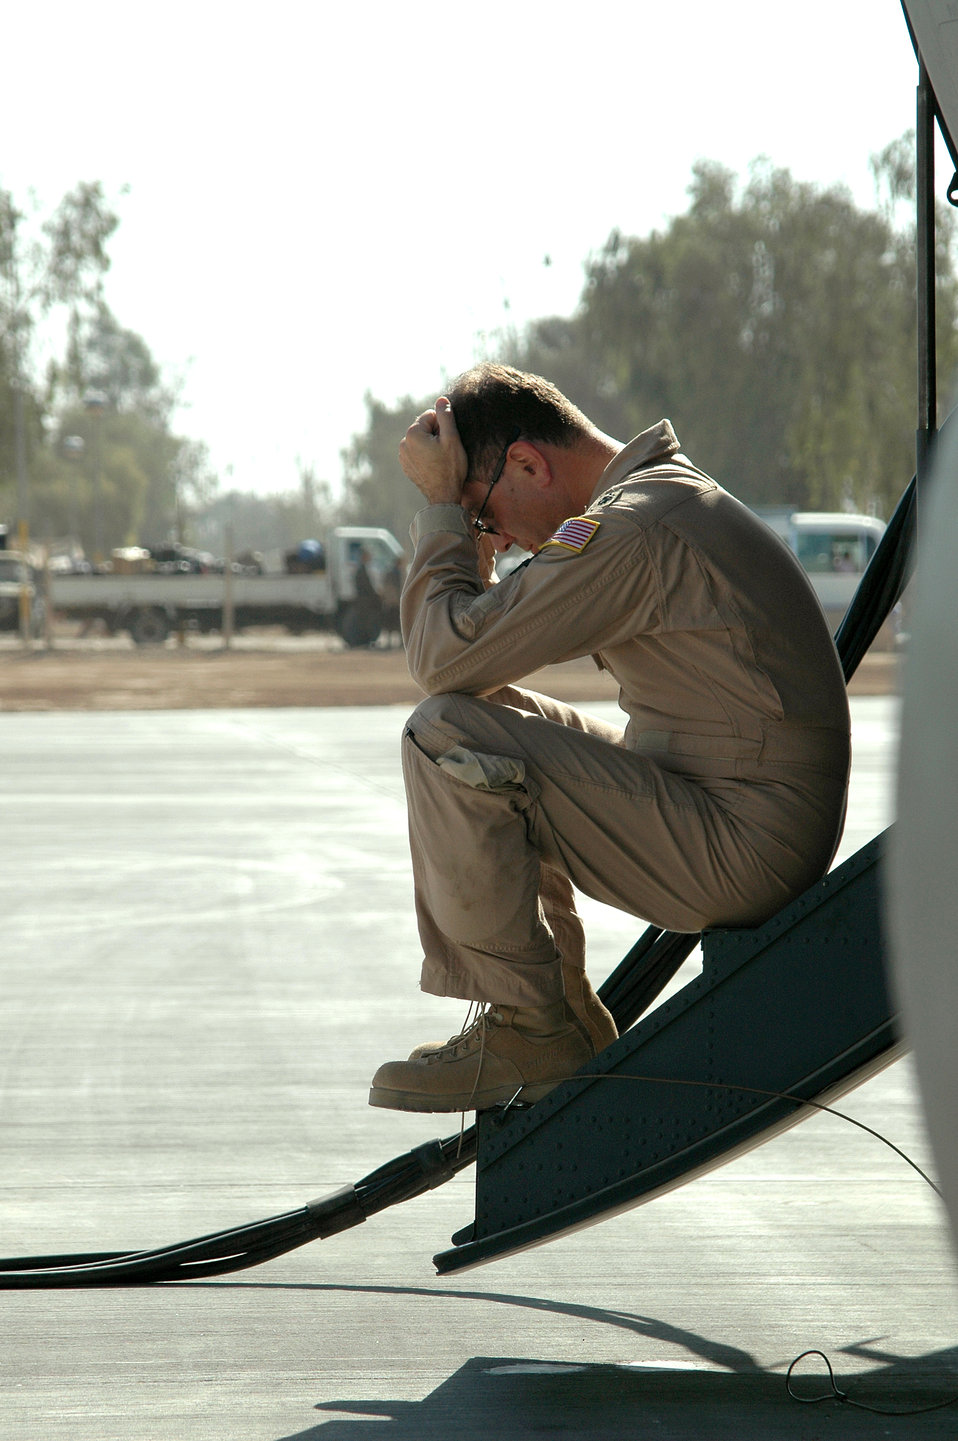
Operation Iraqi Freedom

BALAD AIR BASE, Iraq (AFPN) -- Pilot Lt. Col. Thomas Casey takes a break while Airmen load cargo onto his C-130 Hercules aircraft before a resupply mission. Colonel Casey flies with the 746th Expeditionary Airlift Squadron.